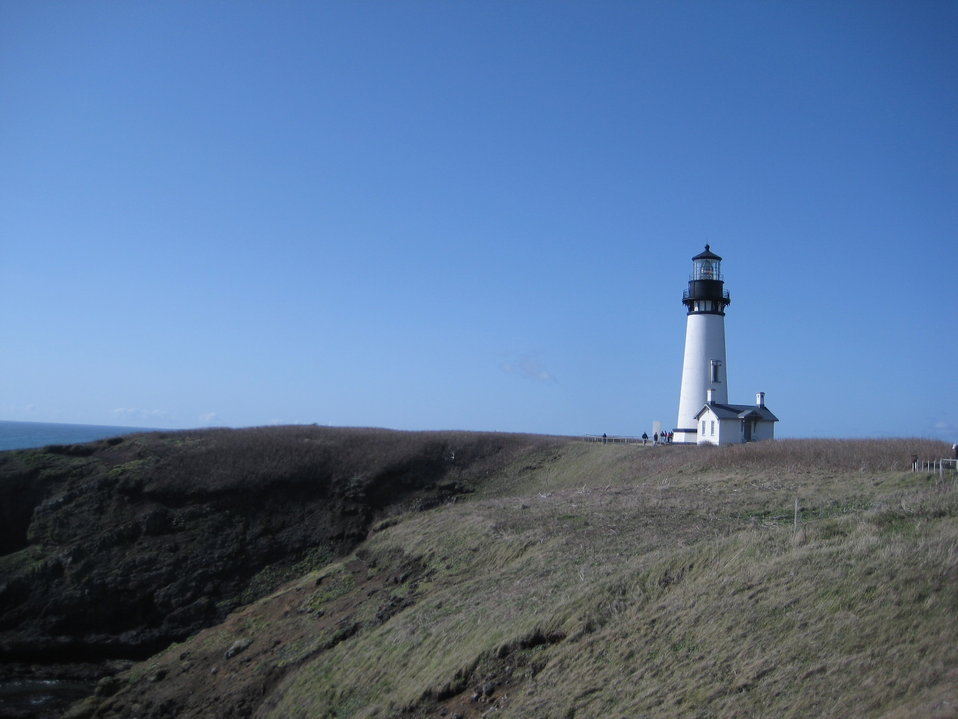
Picture of Yaquina Head Outstanding Natural Area